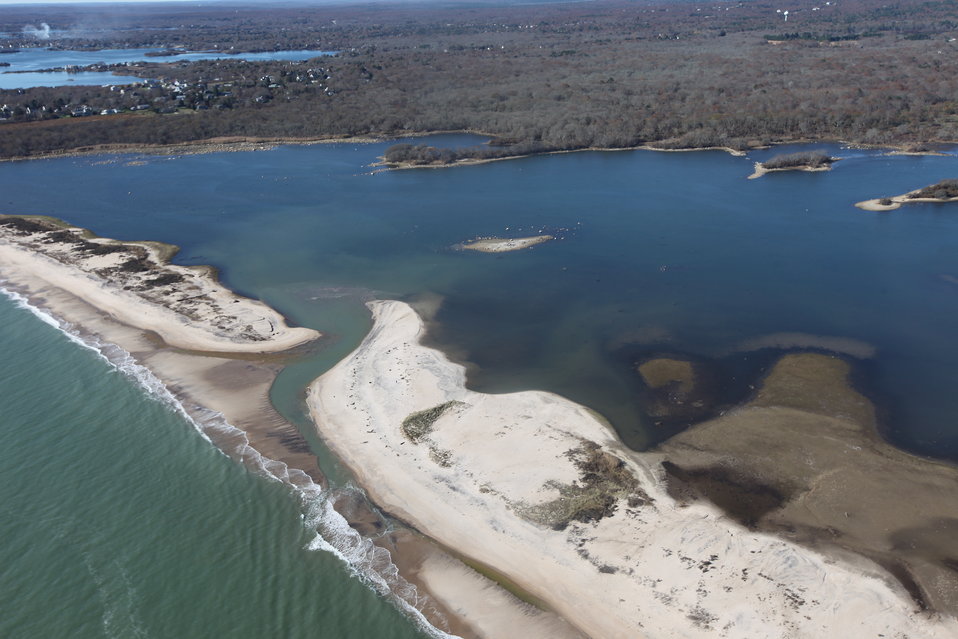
Breach at Trustom Pond (RI)

Closer image of Trustom Pond breach caused by Hurricane Sandy. Trustom Pond had not naturally breached in over a decade prior to Hurricane Sandy.